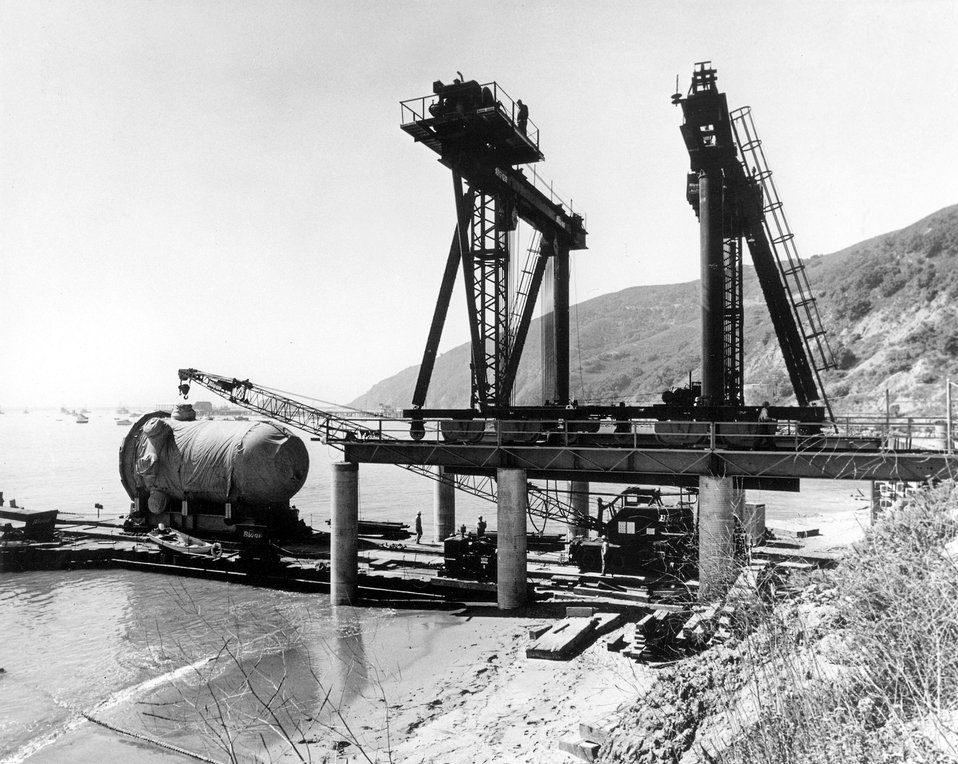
Unit 1 was brought ashore at a special barge landing site near Avila Beach, California, on September 17, 1970, after a barge-ship-barge trip had brought it from Chattanooga, Tennessee. Circa 1971.